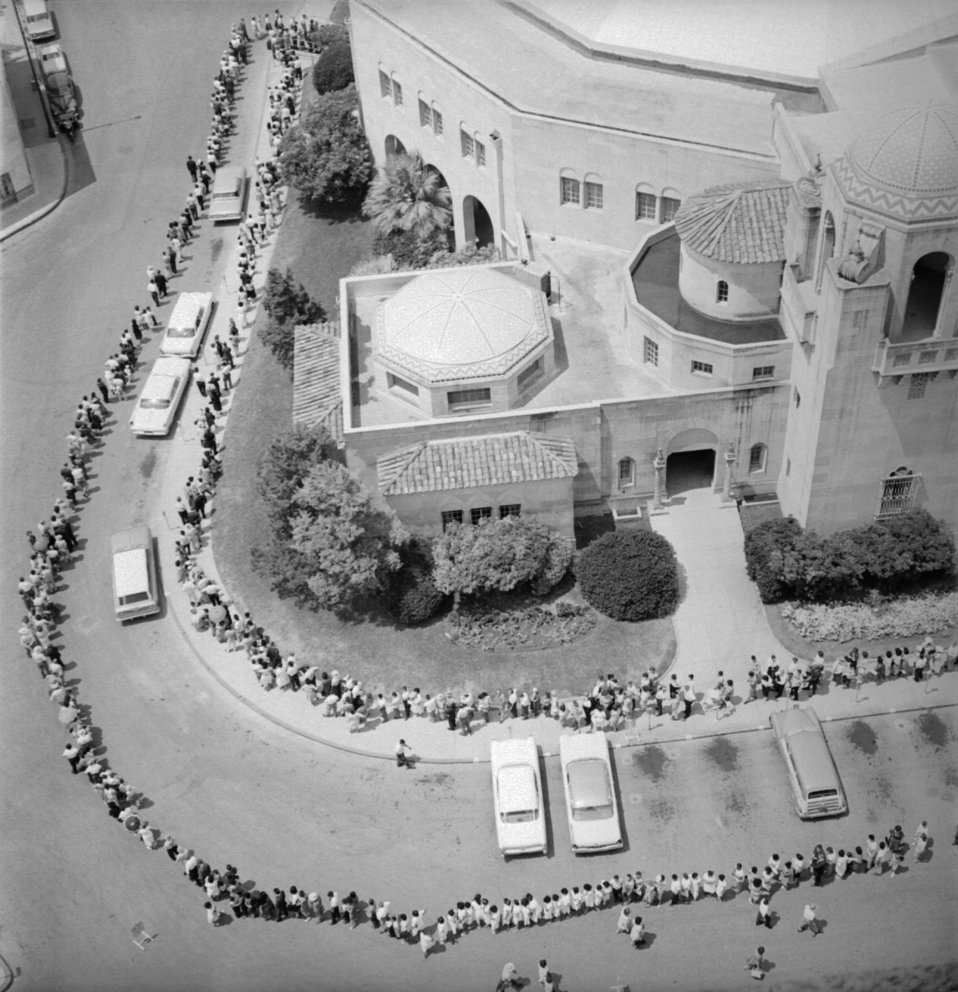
An aerial view of a crowd surrounding a massive city auditorium in San Antonio, TX awaiting polio immunization, 1962.